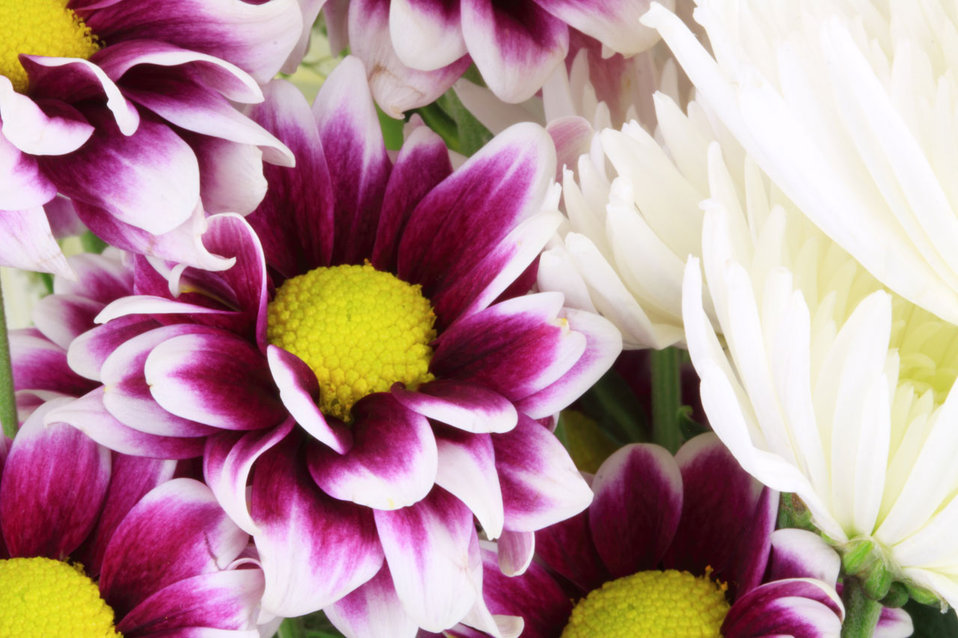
Dahlia flowers in bouquet.